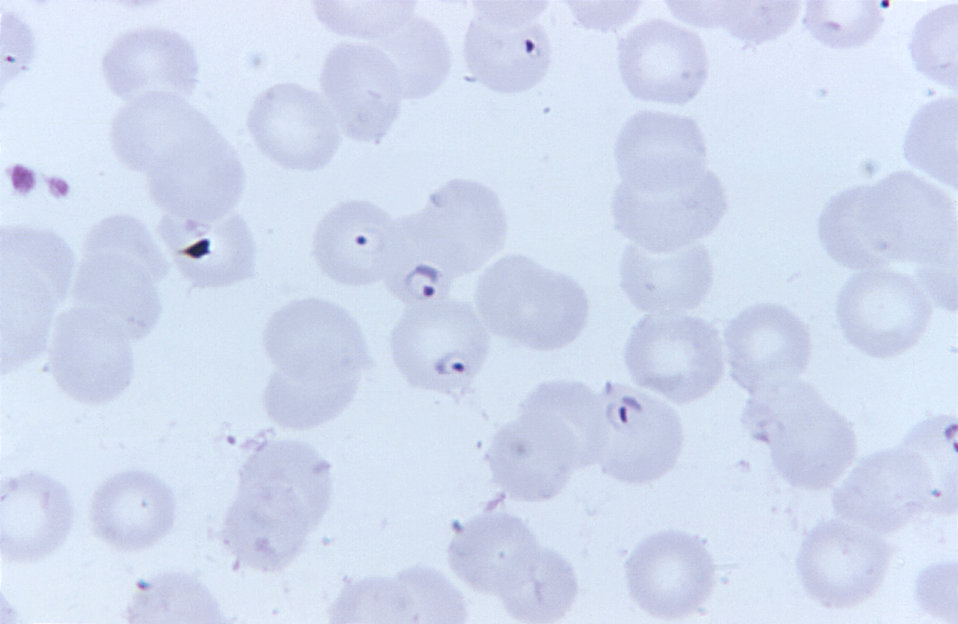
This thin film blood smear reveals a number of Plasmodium falciparum ring form parasites using Giemsa stain; Mag. 1125X.